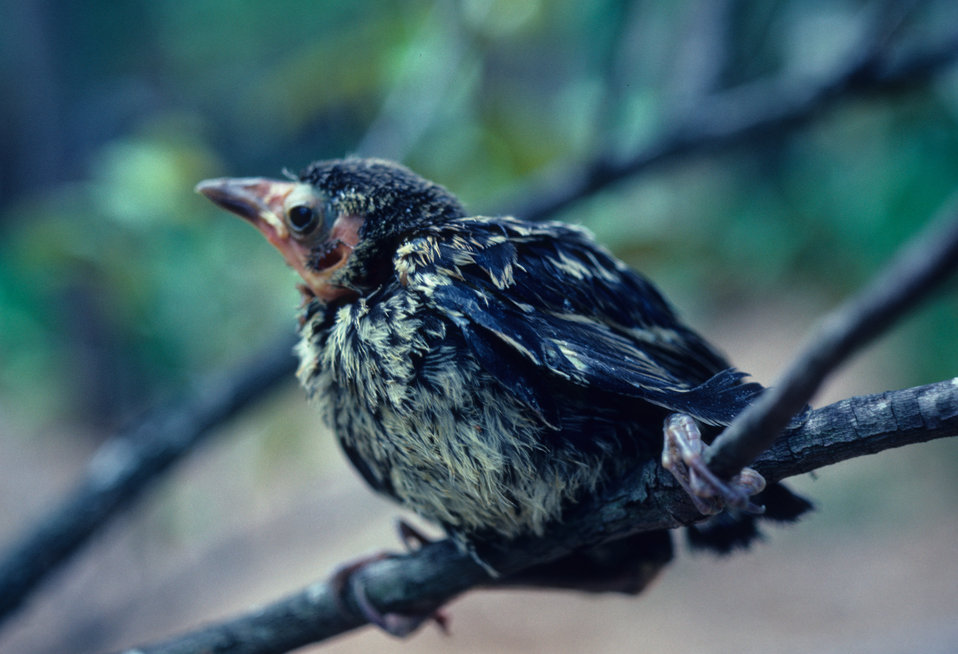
Baby Grackle.